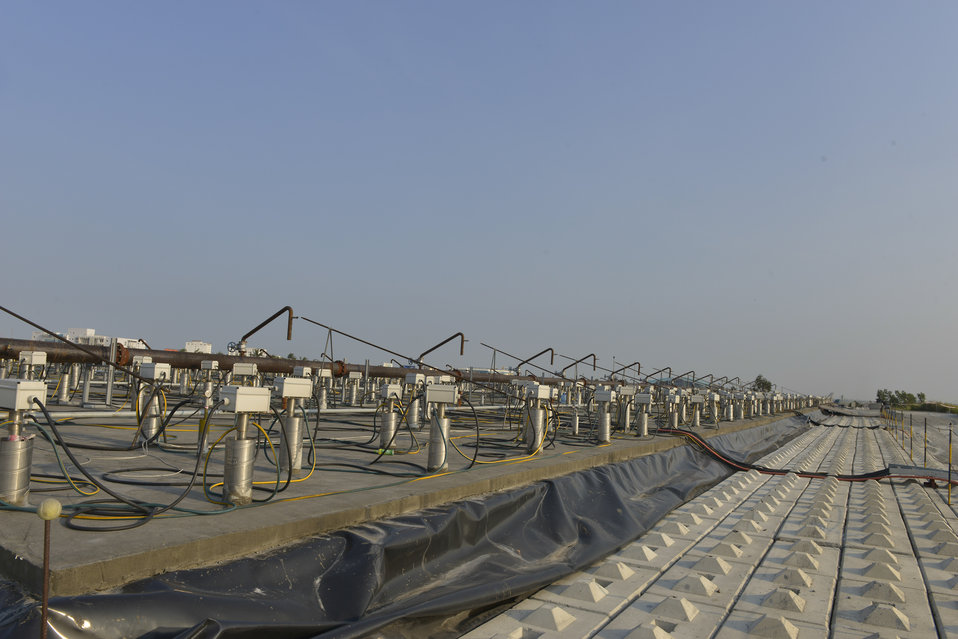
The containment and treatment structure at the Danang Airport Project site.

Heating elements have been installed into the heater wells that are drilled throughout the containment structure, and power cables have been installed to connect the treatment system to the electrical substations adjacent to the containment structure.

March 24, 2014.